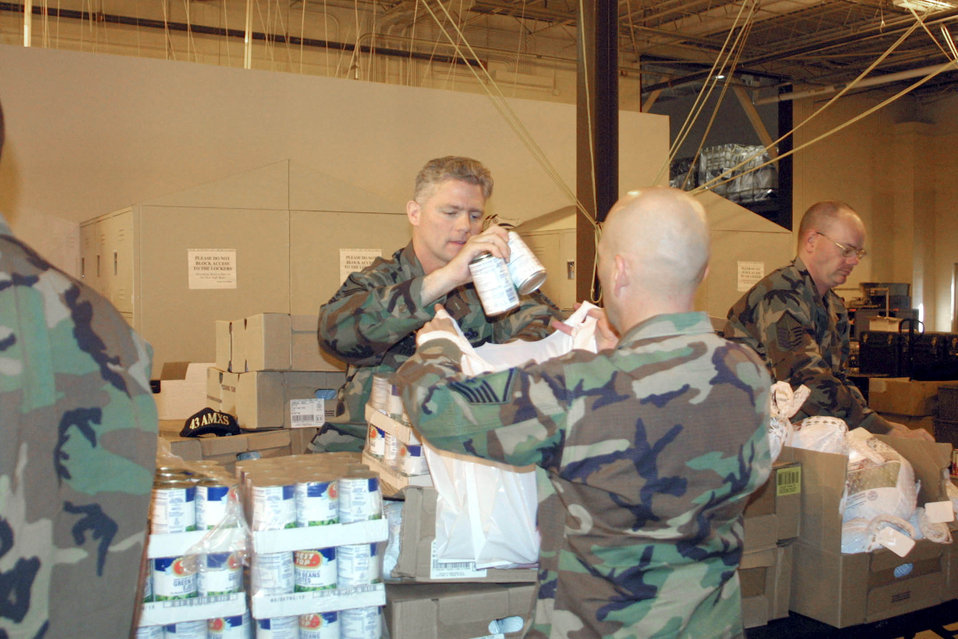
Thanks 'giving'

POPE AIR FORCE BASE, N.C. -- Master Sgt. Vance Martin places cans of food into a Thanksgiving basket at the 43rd Aeromedical Evacuation Squadron warehouse here Nov. 21. The First Sergeant's Council assembled 175 baskets to be given to needy families. Each basket contained a turkey, stuffing, potatoes, rolls, cranberry sauce, green beans and a pie. The baskets were paid for by donations from various private base organizations. Martin is the first sergeant for the 43rd Aircraft Maintenance Squadron.